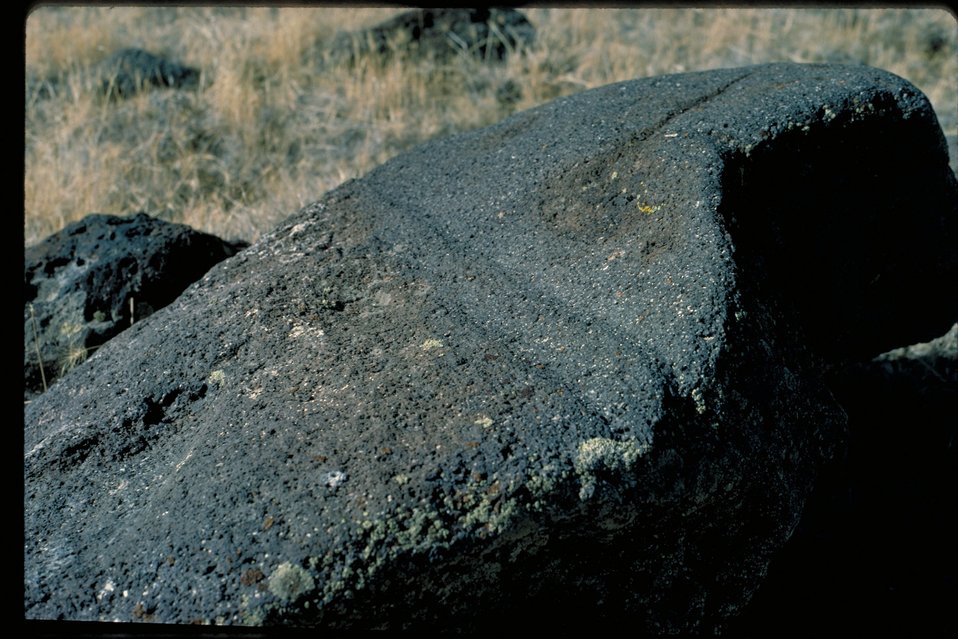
Oregon Trail Northwest of Canyon creek Lower Snake River District